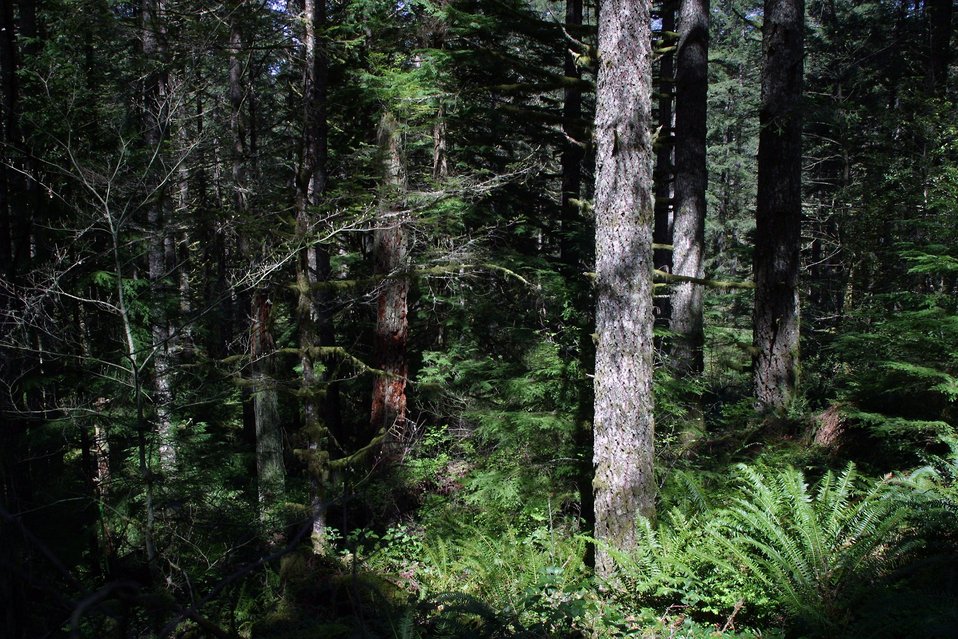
BLM forest lands in the Santiam watershed.